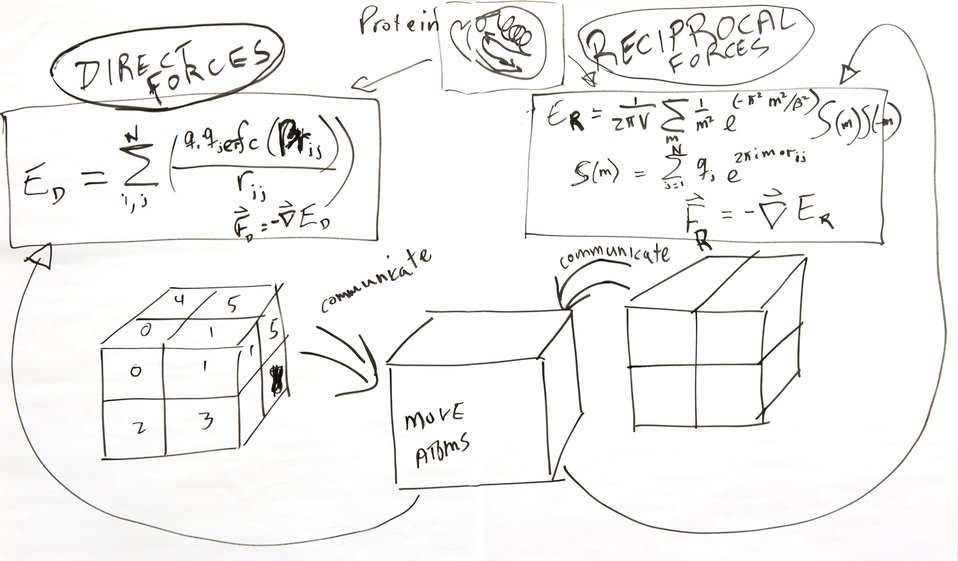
CHARMM, Chemistry at Harvard Molecular Mechanics

February 11, 2013 - NREL scientists Michael Crowley and Antti-Pekka Hynninen have developed algorithms that speed calculations done by the software tool CHARMM by several orders of magnitude, using code such as the one pictured. Using NREL's new petascale supercomputer housed in the Energy Systems Integration Facility, they can simulate the motions of thousands of atoms, leading to greater understanding of how molecular models work.